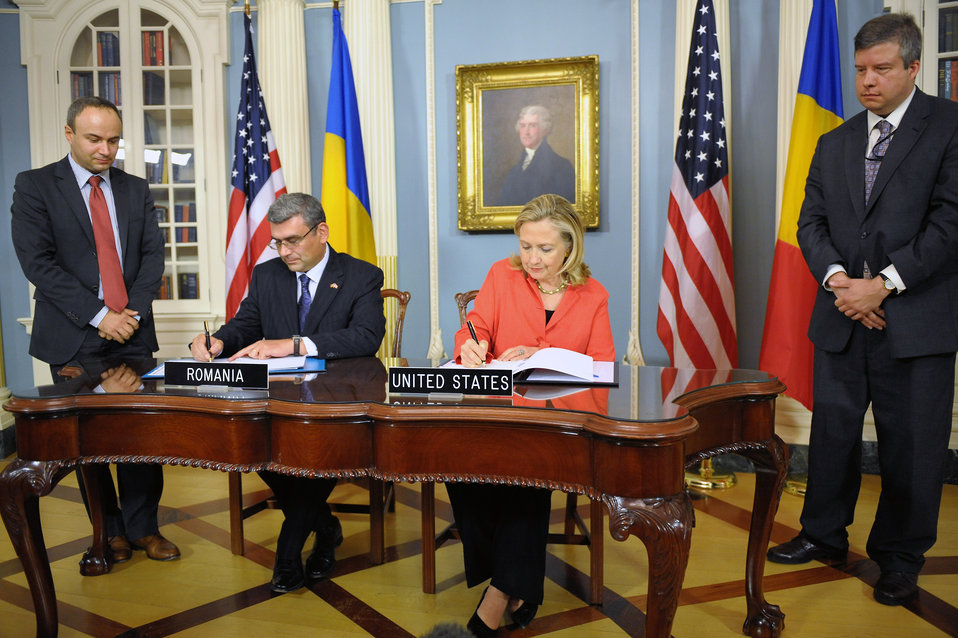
Secretary Clinton and Romanian Foreign Minister Baconschi Sign the Ballistic Missile Defense Agreement

U.S. Secretary of State Hillary Rodham Clinton and Romanian Foreign Minister Teodor Baconschi sign the Ballistic Missile Defense Agreement, in the Treaty Room at the U.S. Department of State in Washington, D.C., on September 13, 2011.